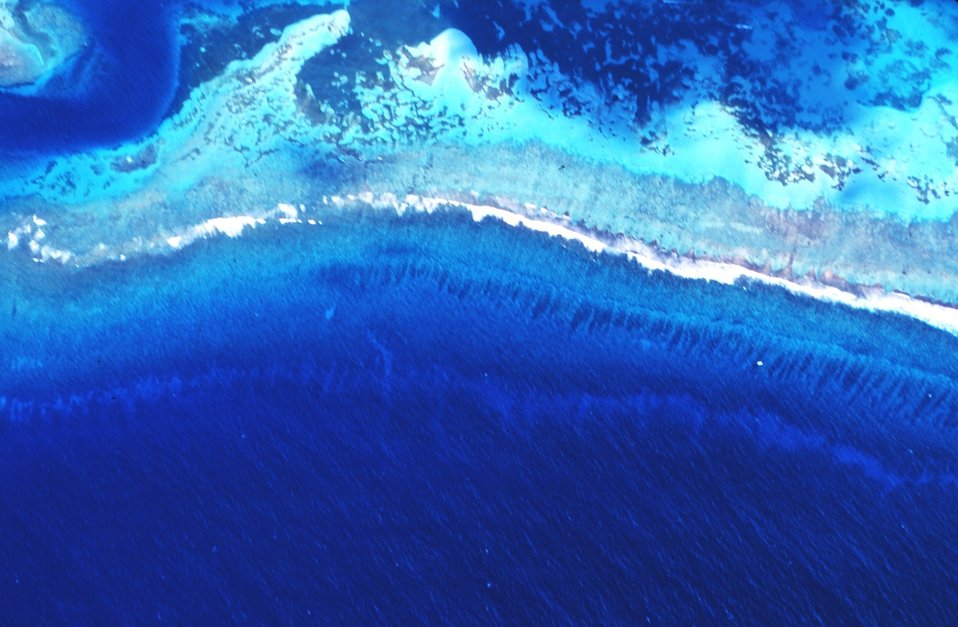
The meeting of deepsea and reef. Note channel in upper left -- headed into Christiansted.